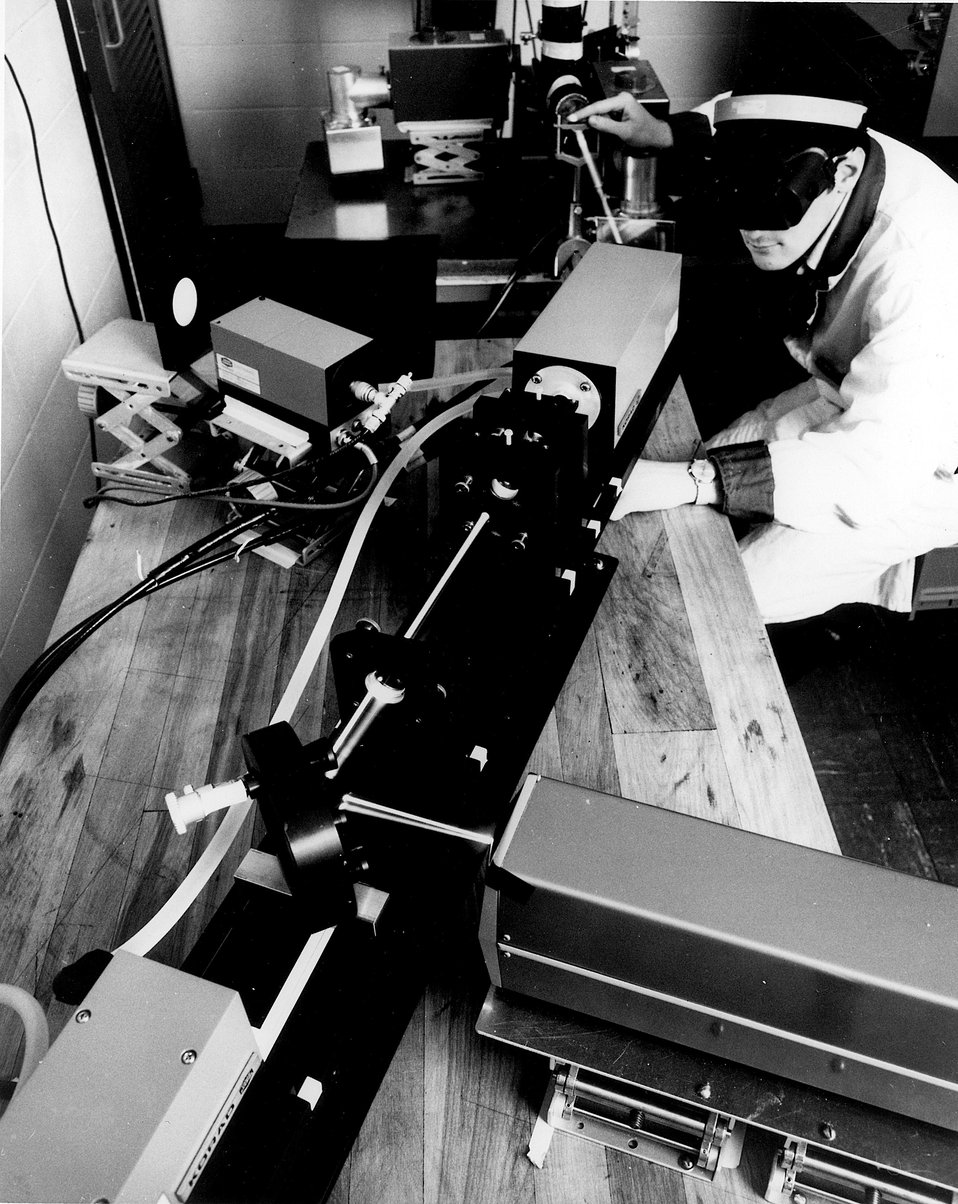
Rapid chemical reactions in solutions are generally studied by a temperature-jump technique. c. 1972